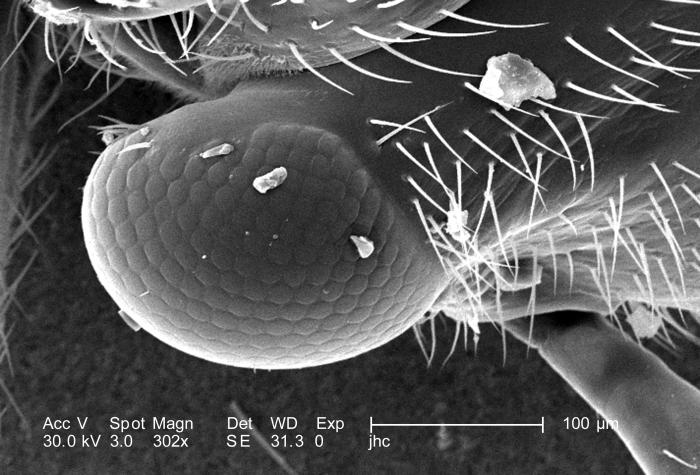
At a magnification of 302x, i.e., approximately four times greater than PHIL 9901, this scanning electron micrograph (SEM), depicted one of the two compound eyes of an unidentified 1/4"-sized black flying insect with a small red mark on its dorsum, found in the Decatur, Georgia suburbs.The compound eye is given this name due to the fact that the single large eye is really made up of many repeating units known as "ommatidia', each composed of separate units made up of a photoreceptor cell, support cell, and pigment cells. Though each of these visual mechanisms functions as a separate organ, together they provide the organism with a "compound' picture of its environment. Due to what is referred to as the "flicker effect', the compound eye is made very sensitive to movement, with each ommatidium turning on and off, as objects pass across its field of view. The bilateral anatomical placement of the insect's eyes provides the organism with a very wide range of visual sensitivity.